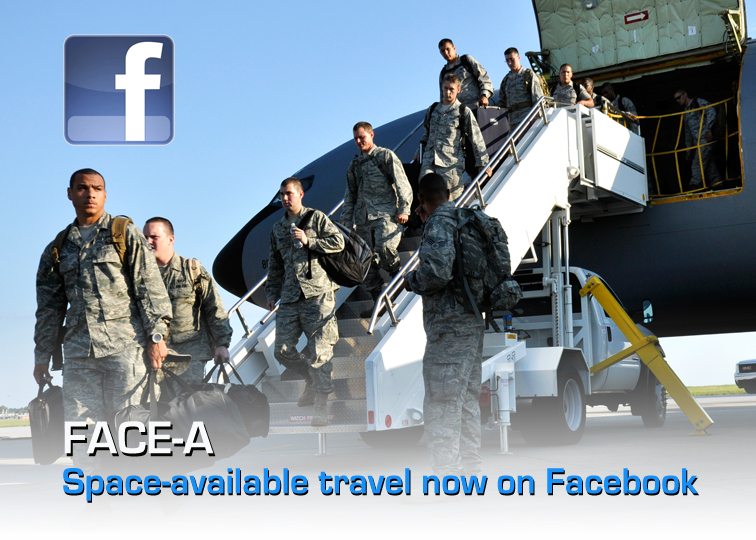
Space-available travel now on Facebook